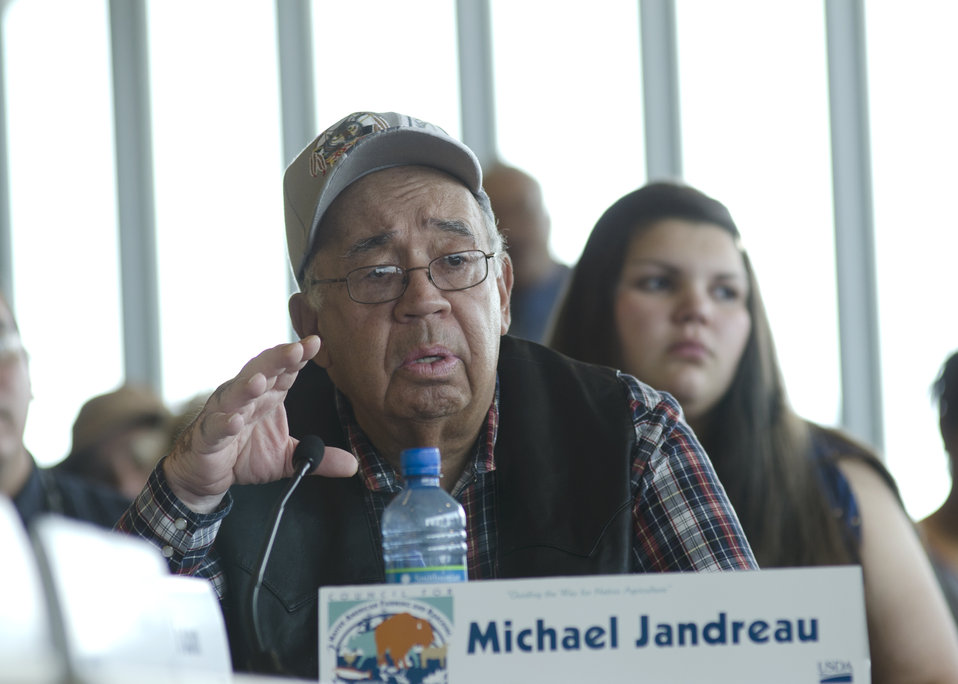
Tribal Chairman Lower Brule Sioux Tribe in Fort Thompson, SD., Michael Jandreau, speaks at the first business meeting of the U.S. Department of Agriculture’s (USDA) Council for Native American Farming and Ranching (CNAFR) held at the National Museum of the American Indian in Washington, D.C., on Tuesday, Aug. 14, 2012. CNAFR was created to advise the Secretary on ways to eliminate barriers to participation for Native American Farmers and Ranchers in USDA programs. The Council was established as part of the Keepseagle settlement, and is conducted under the oversight of USDA's Office of Tribal Relations under the Office of the Secretary of Agriculture.